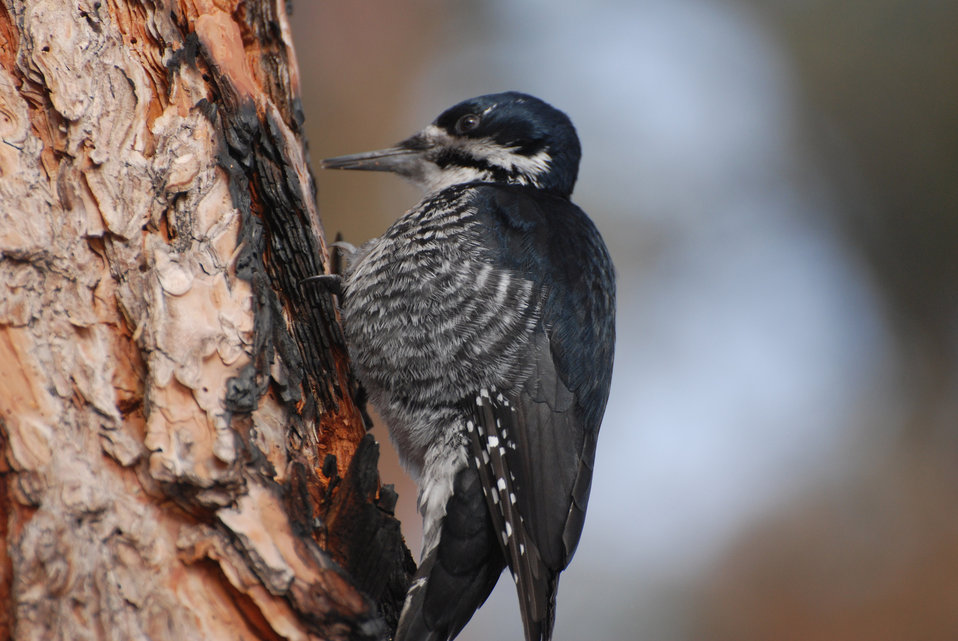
Female Black-backed woodpecker